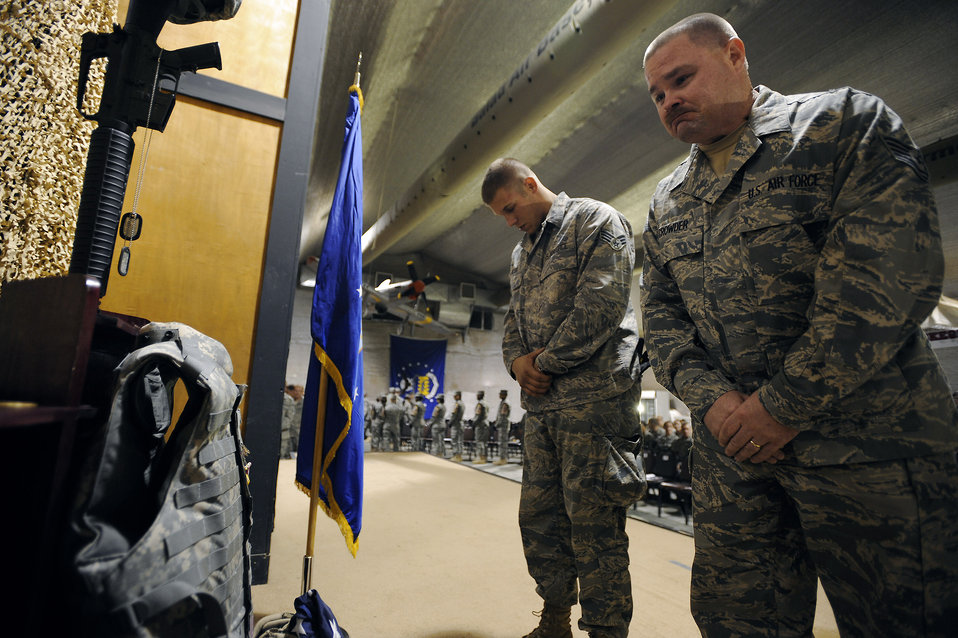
Joint Base Balad Airmen remember fallen wingman

Tech. Sgt. Charles Crowder (right) mourns the death of Staff Sgt. Brian Hause during a memorial service held in his honor Oct. 27 at Joint Base Balad, Iraq. Sergeant Hause received an Air Force Commendation Medal and Iraq Campaign Medal posthumously for his contributions while deployed here from Shaw Air Force Base, S.C. Sergeant Crowder, a weapons expediter with the 332nd Expeditionary Maintenance Squadron, is also deployed from Shaw AFB.